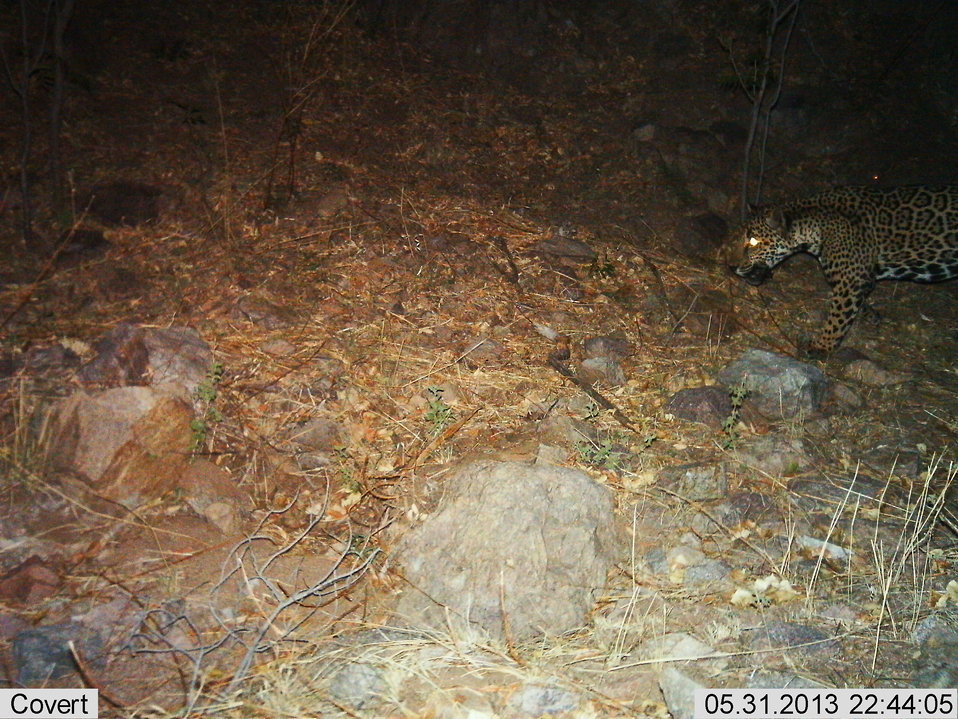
Male jaguar photographed by automatic wildlife cameras in the Santa Rita Mountains on May 31, 2013, as part of a U.S. Fish and Wildlife Service/Department of Homeland Security-funded jaguar survey conducted by University of Arizona. Comparison of pelage markings with other photos confirms that this is the same jaguar that has been repeatedly photographed in the survey area in the Santa Rita Mountains. This photo location is not far from previous photo detections.